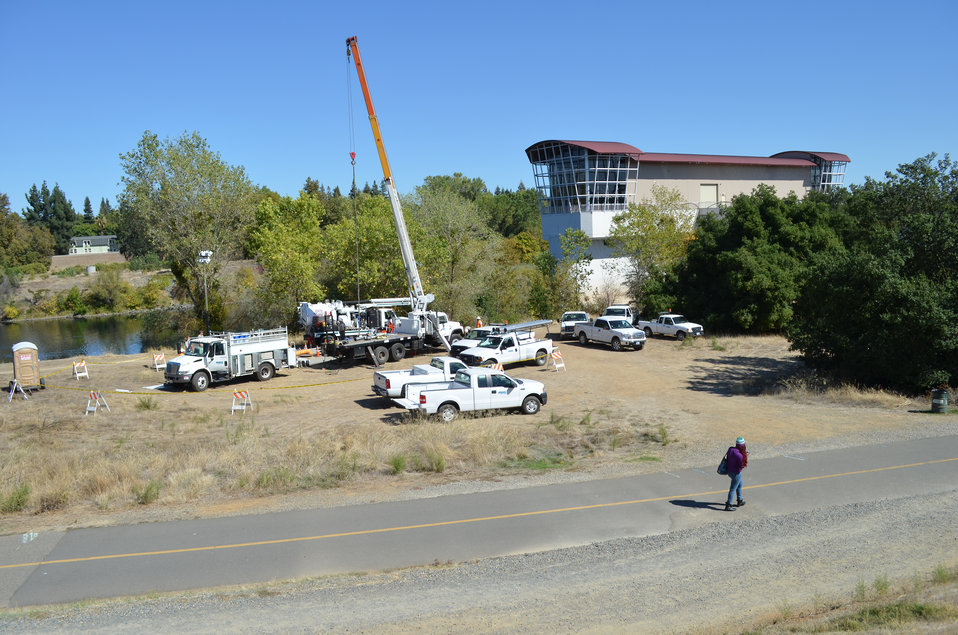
Mobilizing equipment near the Fairbairn Water Treatment Plant

Crews for the U.S. Army Corps of Engineers Sacramento District are mobilizing equipment in preparation for levee work this fall along the American River near the Fairbairn Water Treatment Plant in Sacramento, Calif., shown Oct. 3, 2013. The Corps built more than 20 miles of seepage cutoff walls into American River levees between 2000 and 2002, but work was set aside for later where complicated encroachments existed such as utilities, power lines and bridges.